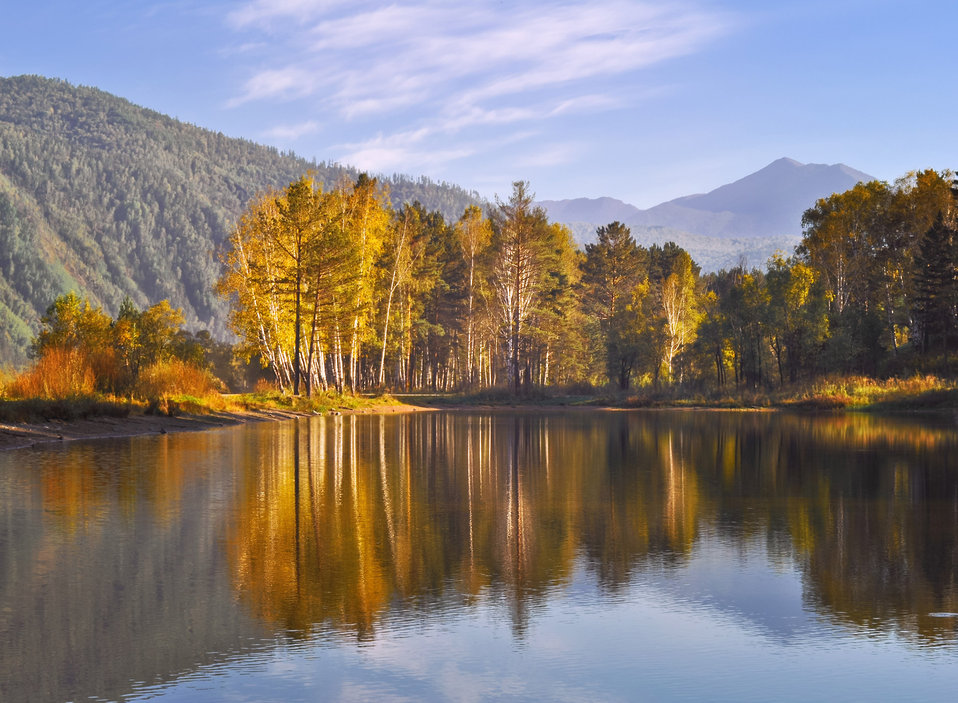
Enchanted forest in autumn reflected in water.